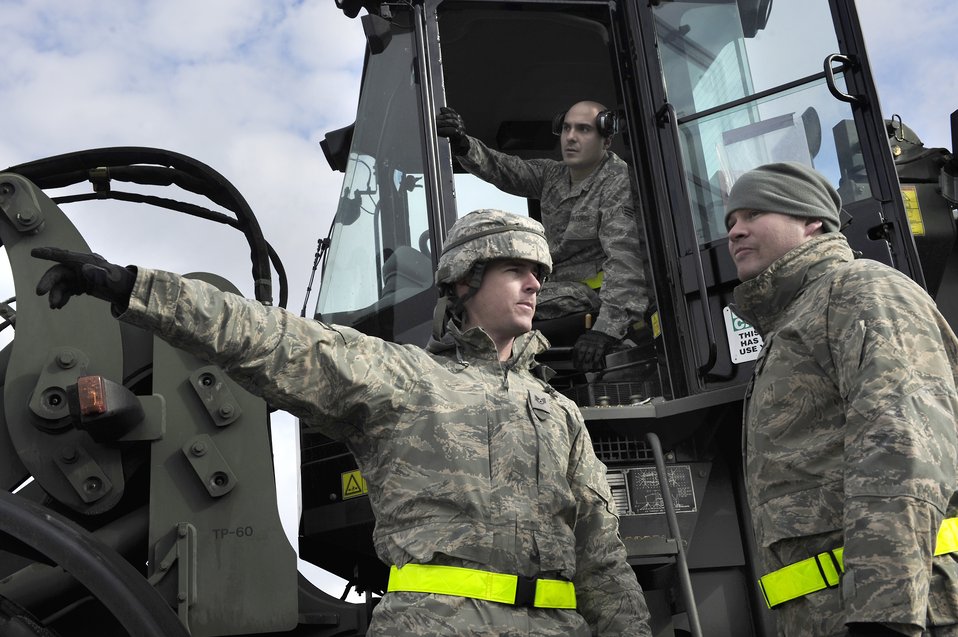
Joint operational access exercise

Airmen from the 570th Global Mobility Readiness Squadron discuss where to set up a mobile command post during a joint operational access exercise Feb. 10, 2011, near Fayetteville, N.C.